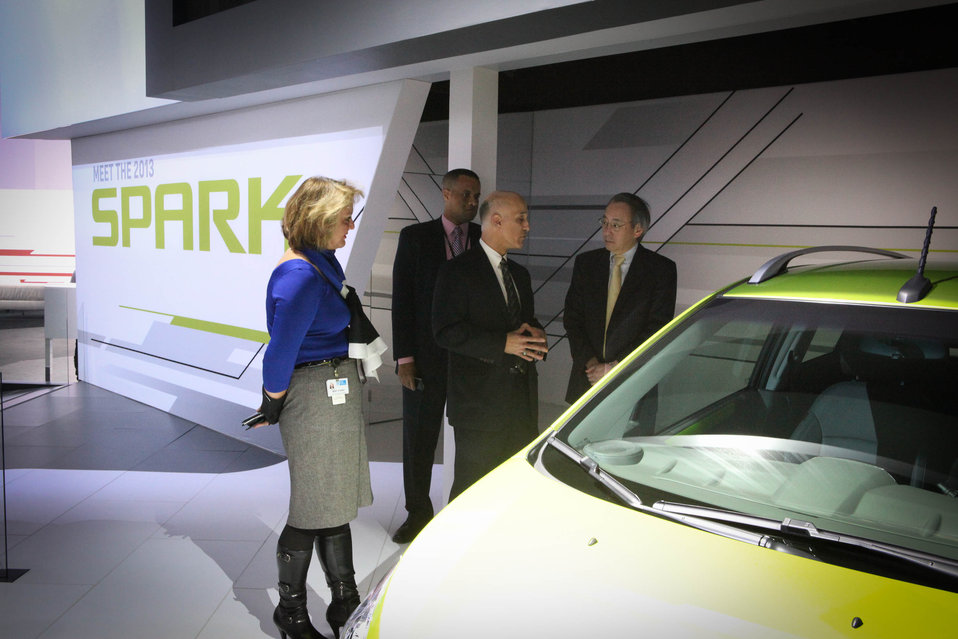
Jim Federico (General Motors) is talking to Energy Secretary Steven Chu about the 2013 Chevrolet Spark.